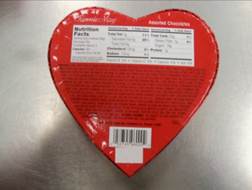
RECALLED – Assorted chocolates

February 20, 2014 – Fannie May Issues A Voluntary Recall Of Its 4.0 Oz. Heart-shaped Box Of Assorted Chocolates Due To Undeclared Peanuts.